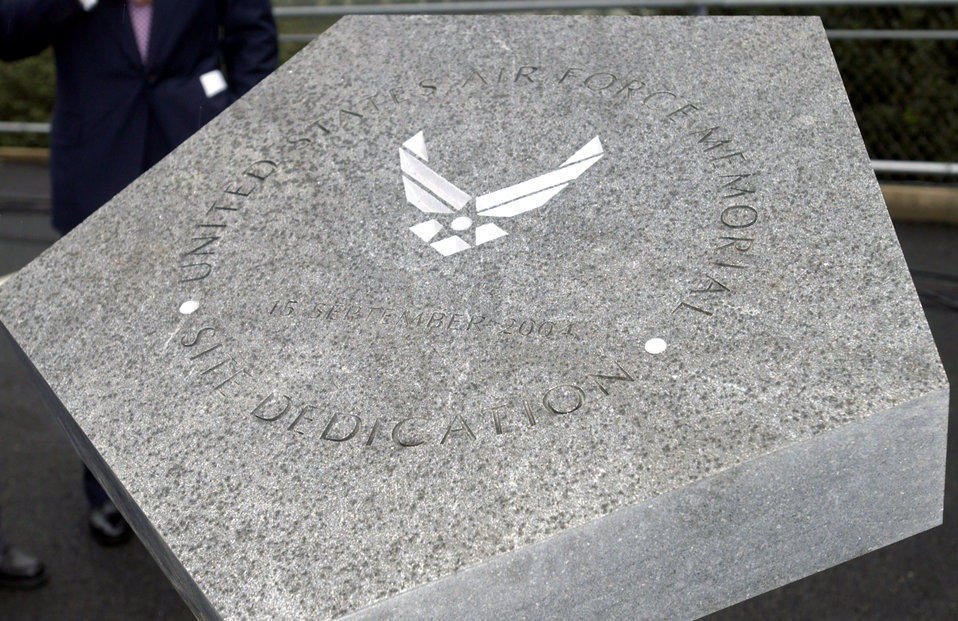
Thirteen years later, Air Force dedicates its memorial

ARLINGTON, Va. -- Hundreds of people attended the unveiling of a dedication marker for the national Air Force Memorial site here Sept. 15. The 270-foot tall memorial is designed to honor all those who have served in the U.S. Air Force and its predecessor organizations.